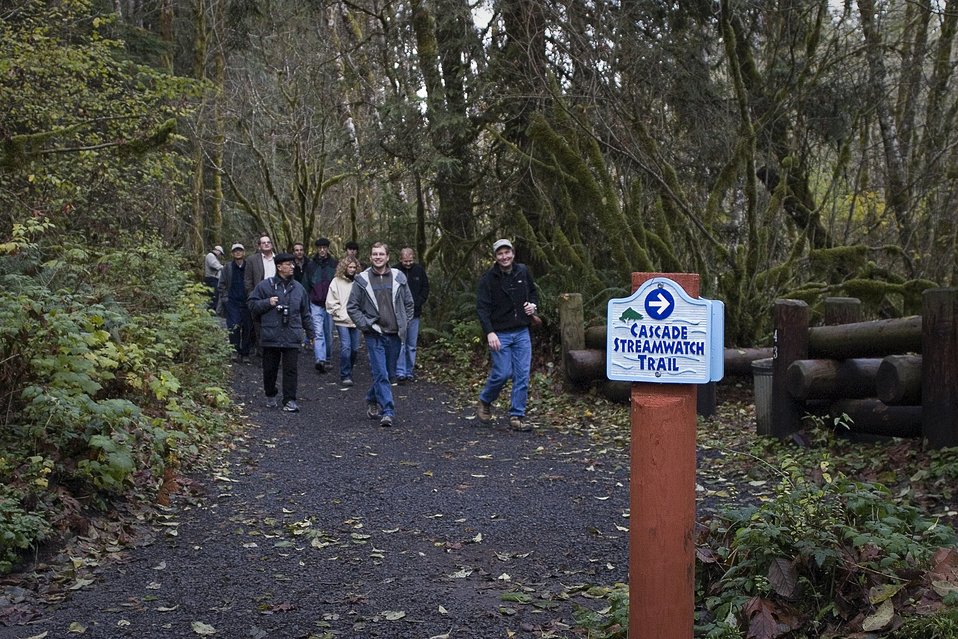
Dale Waddell, Executive Director of Wolftree, and Andrei Klimenko lead the Kamchatka Wild Salmon Center tour group along the Cascade Streamwatch Trail at BLM's Wildwood Recreation Site.